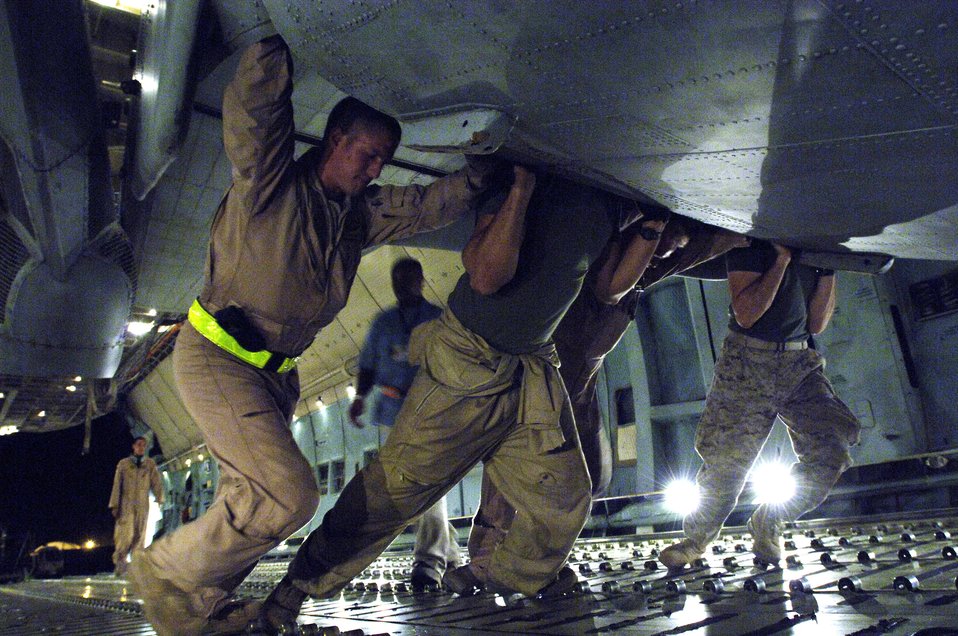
Plenty of room for two

Airmen and Marines load the first of two CH-53E Super Stallion helicopters onto a C-5 Galaxy Sept. 9 at Camp Lemonier, Djibouti. The two helicopters were being transported to Marine Corps Air Station Cherry Point, N.C.